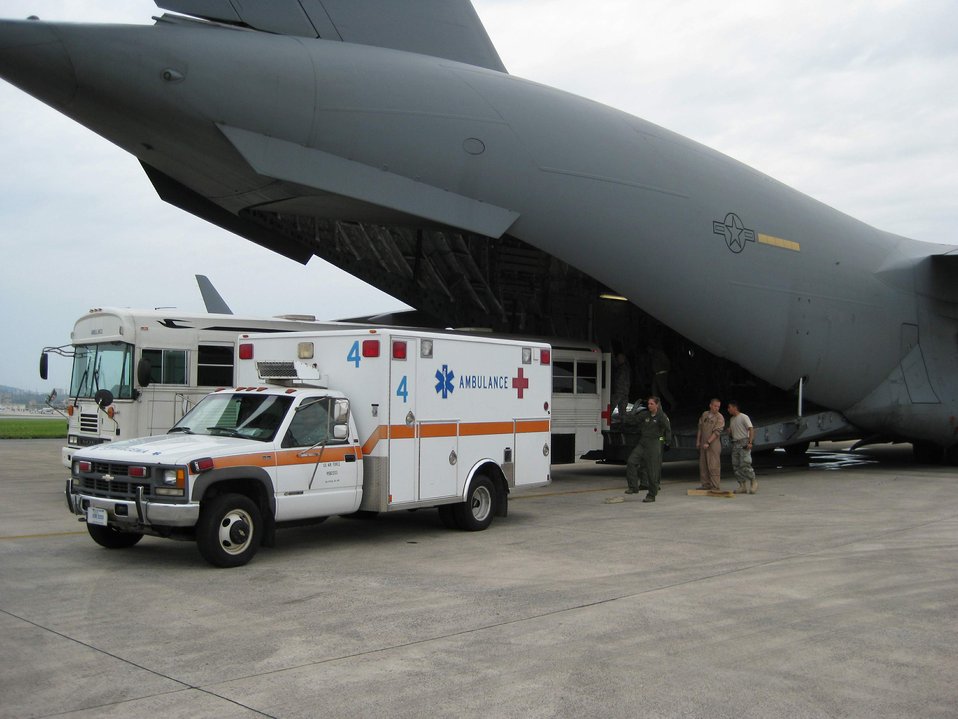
Joint team moves critically ill infants

Two critically ill infants are loaded into a waiting C-17 Globemaster III May 26 for transport from Kadena Air Base, Japan, to Wilford Hall Medical Center at Lackland Air Force Base, Texas. The combined efforts of the ECMO team from Wilford Hall's 59th Medical Wing; ground and aircrews from Kadena AB, Elmendorf and Eielson Air Force bases, Alaska; and Reserve support from the 433rd Airlift Wing at Lackland AFB, helped to ensure a successful mission to bring the ill infants to Wilford Hall for the advanced care that was unavailable at the U.S. Naval Hospital in Okinawa.